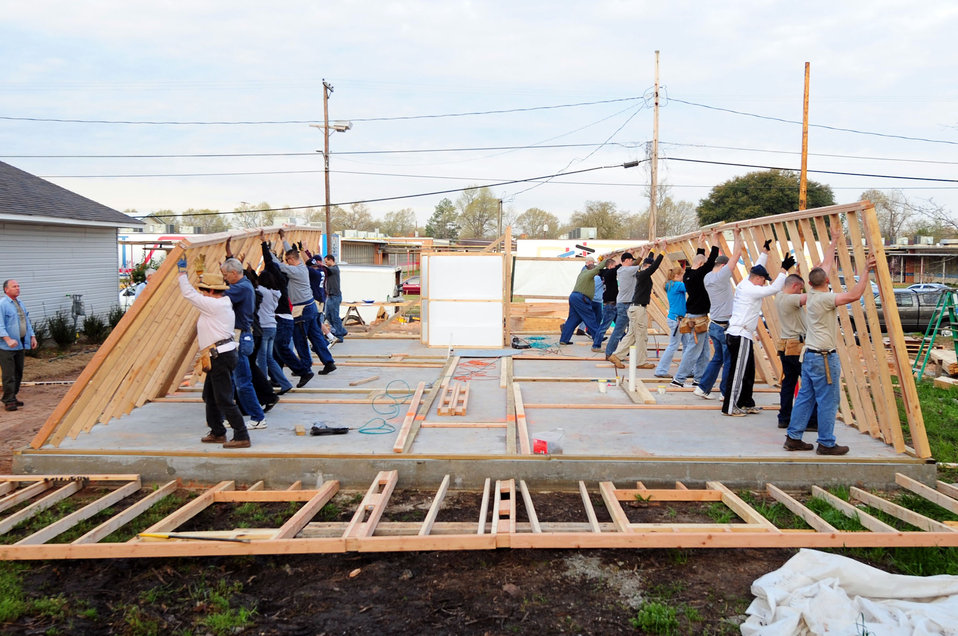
Barksdale Airmen build homes for needy families

Members of the local community and Airmen from Barksdale Air Force Base, La., raise the exterior walls of a Habitat for Humanity home March 20, 2010, in Shreveport, La. More than 20 Barksdale AFB Airmen from the 2nd Civil Engineer Squadron volunteered to help with the construction.